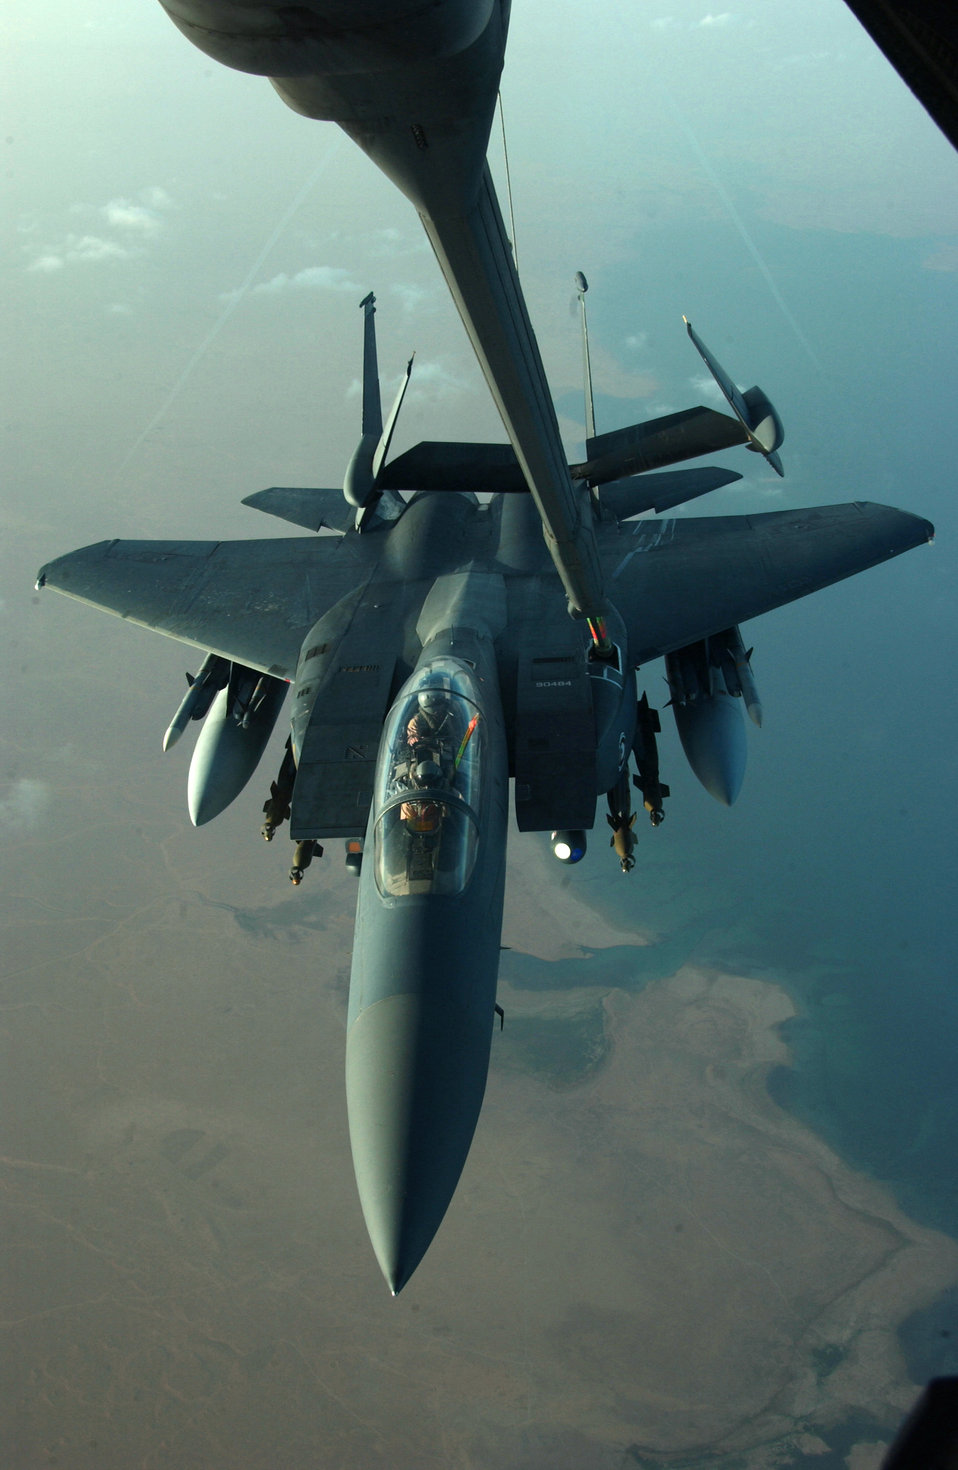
Last stop for gas

OVER IRAQ -- An F-15E Strike Eagle receives fuel from a 908th Expeditionary Air Refueling Squadron KC-10 Extender during a recent mission here. Coalition aircraft average 40 combat sorties daily in support of Operation Iraqi Freedom.